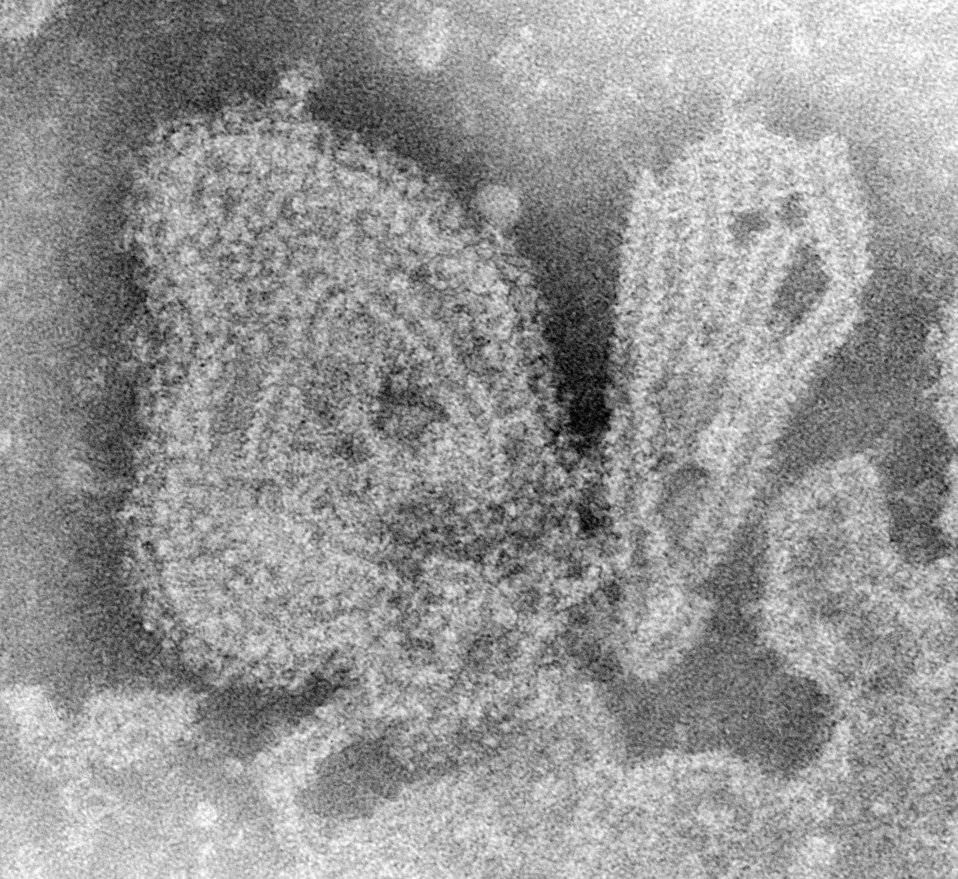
This 1976 negative stained transmission electron micrograph (TEM) depicted the ultrastructural features displayed by the mumps virus.